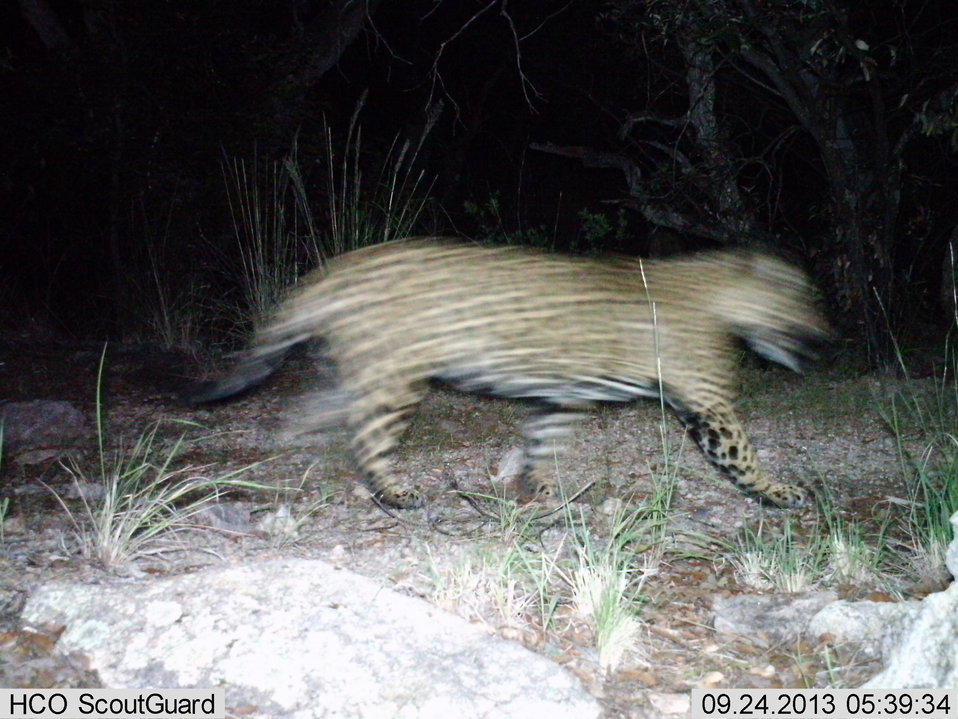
Male jaguar photographed by automatic wildlife cameras in the Santa Rita Mountains on September 24, 2013, as part of a U.S. Fish and Wildlife Service/Department of Homeland Security-funded jaguar survey conducted by University of Arizona. This photo is blurry. The jaguar has been photographed previously at this location.